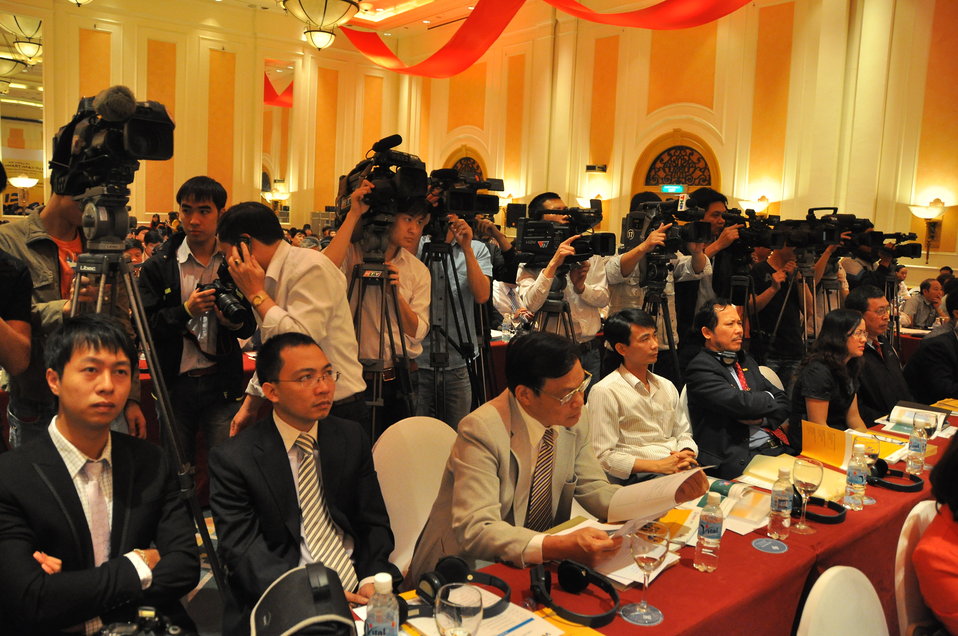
Provincial Competitiveness Index Launch, March 14, 2013

Hanoi, March 14, 2013